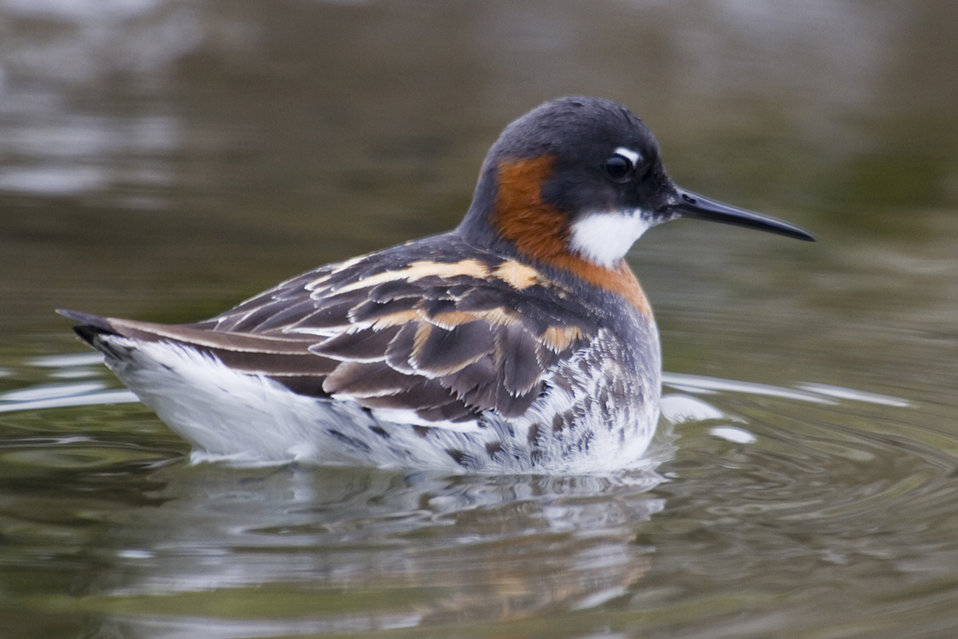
Photo of the Week - Red-necked Phalarope (ME)

Photo of the Week - 1/27/14

‘Unique’ bird migration discovered

A tracking device which weighs less than a paperclip has helped scientists uncover what they say is one of the world’s great bird migrations. It was attached to a red-necked phalarope from Scotland that migrated thousands of miles west across the Atlantic to the Pacific Ocean. The journey has never before been recorded for a European breeding bird.

The red-necked phalarope is one of the UK’s rarest birds, and is only found in Shetland and the Western Isles. For more information on this ‘unique’ migration: www.bbc.co.uk/news/uk-scotland-25661650

Red-necked Phalarope use many coastal areas, like the recent Coastal Grant recipient in Harpswell Maine (www.fws.gov/gomcp/) as stopover habitat during their migration. They are also a high priority species for the region and the Atlantic Flyway Shorebird Conservation Business Strategy (www.manomet.org/sites/default/files/publications and tool...)